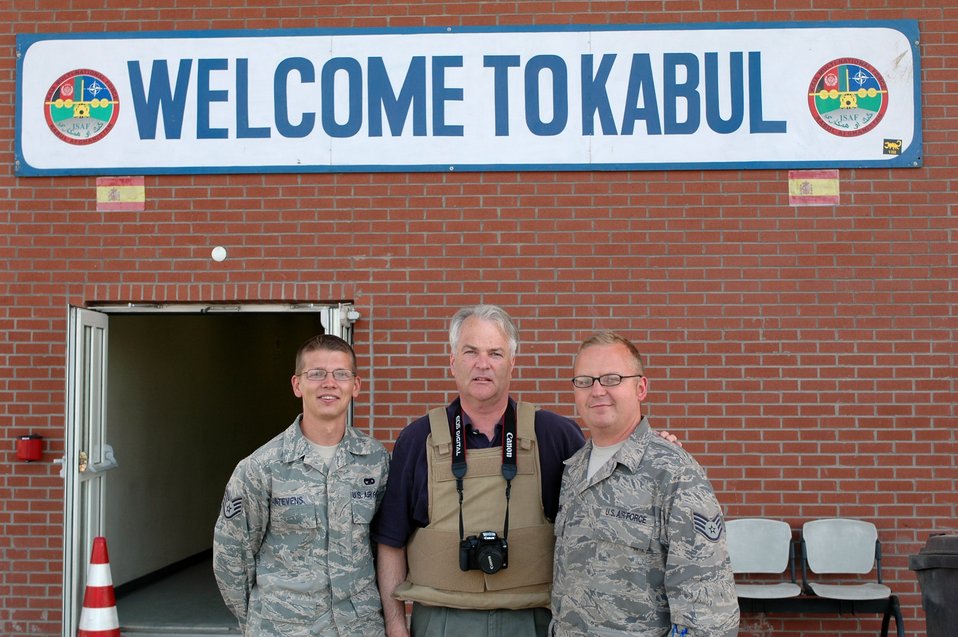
CODEL Berman